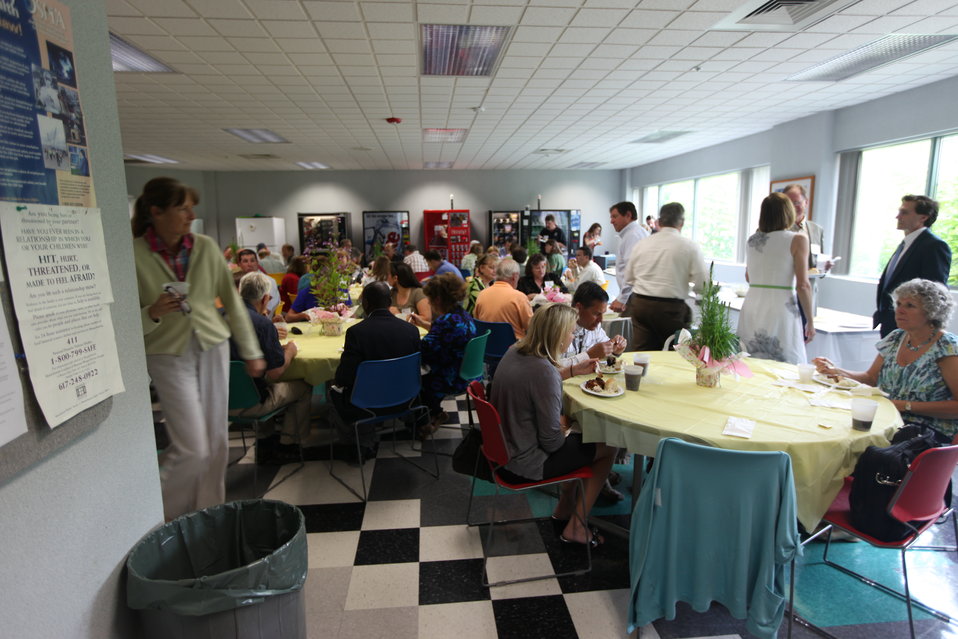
Northeast Region Employee Appreciation Awards

Luncheon